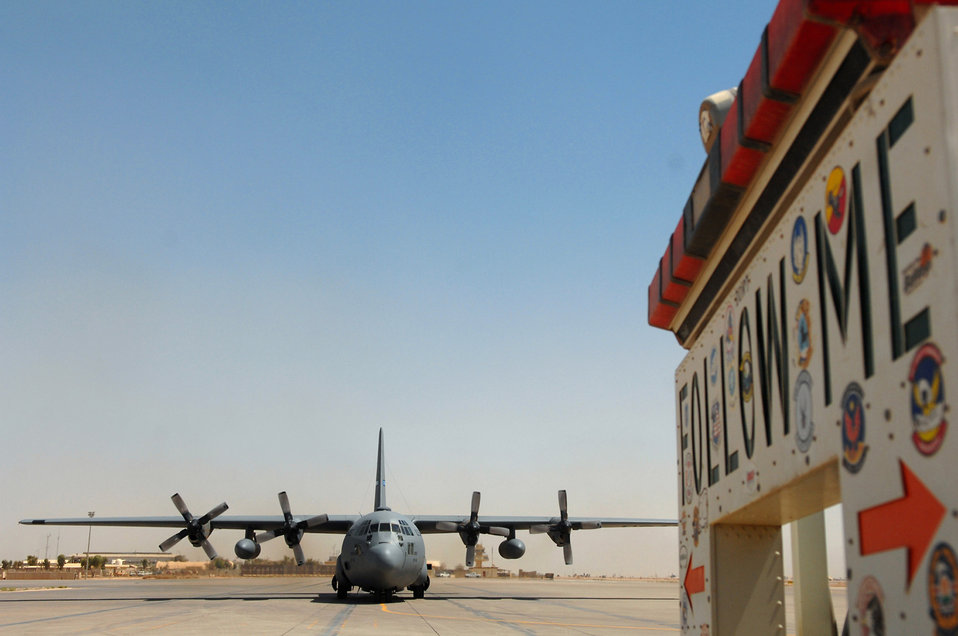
Follow me

Airmen of the 332nd Expeditionary Maintenance Squadron transient alert shop coordinate the ground movement of all aircraft that land May 10 at Balad Air Base, Iraq. Their duties include coordinating aircraft parking positions, fulfilling refueling and maintenance needs, and orchestrating passenger transportation to and from aircraft.